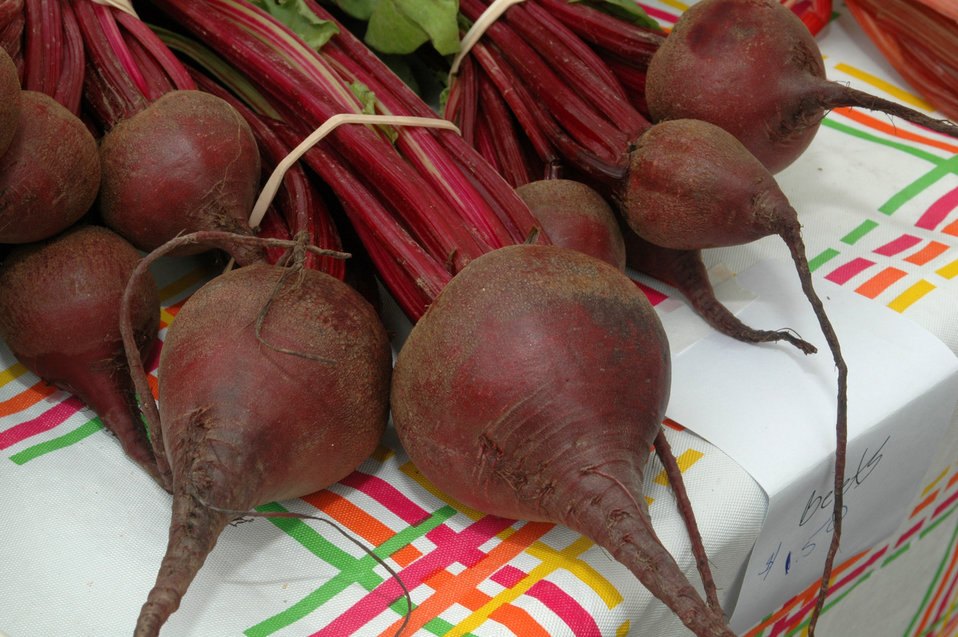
Beets for sale at the U.S. Department of Agriculture (USDA) Farmer’s Market held in the East parking lot of USDA's Whitten Building in Washington, D.C. on June 2, 2006.